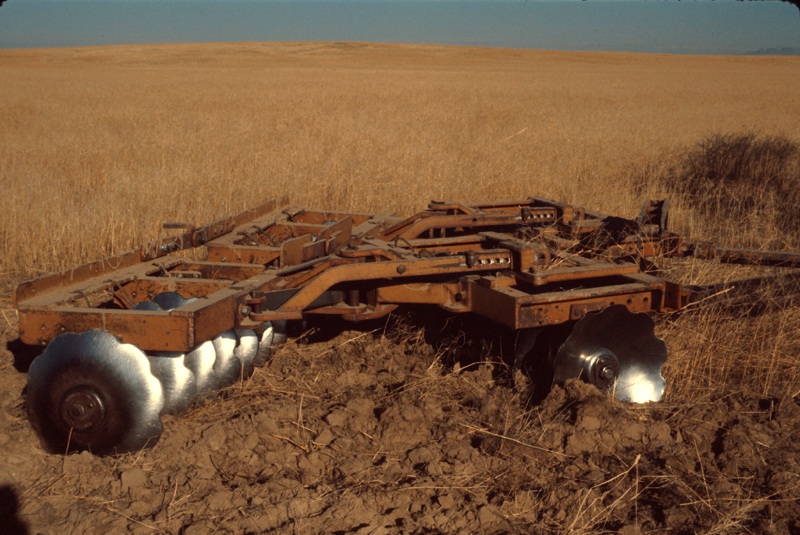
Towner Plow Range Restoration Project Lower Snake River District